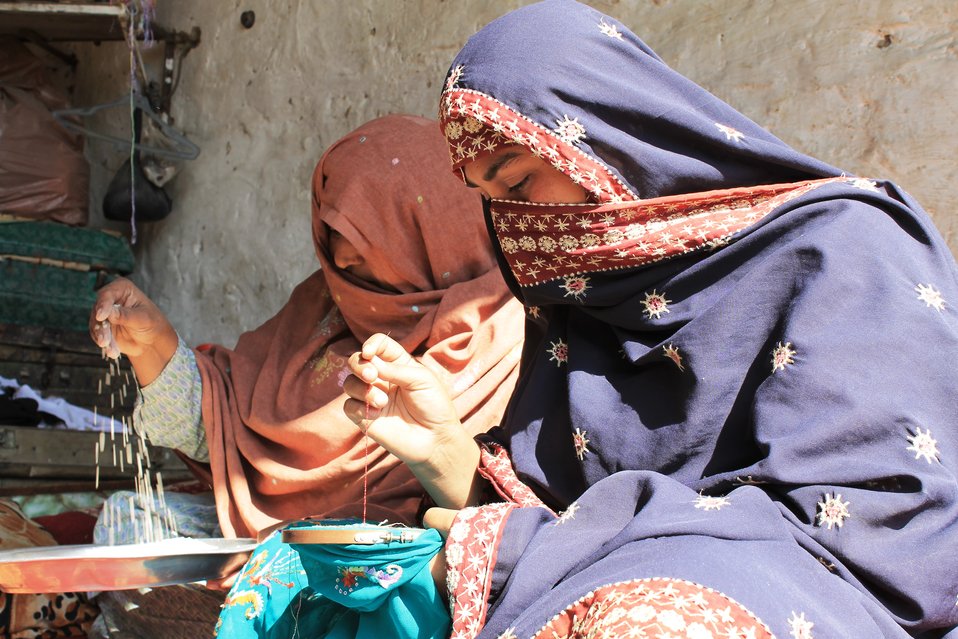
Embellished Fabrics Value Chain Development Initiative under the USAID's Entrepreneurs Project

Swat, October 18, 2012: 'I was getting Rs. 150 (USD 1.5) for a shawl and Rs. 200 (USD 2) for a fully embroidered shirt. Since I have gotten involved with USAID's Entrepreneurs Project, I have started getting bulk orders and my income has doubled. I have been able to emancipate my brother from the harmful (child) labour as well as lend some money to my father to set up a small tuck shop. Our family income is improving gradually. Thanks to the American people for their assistance,' Naseem Akhtar, 25.